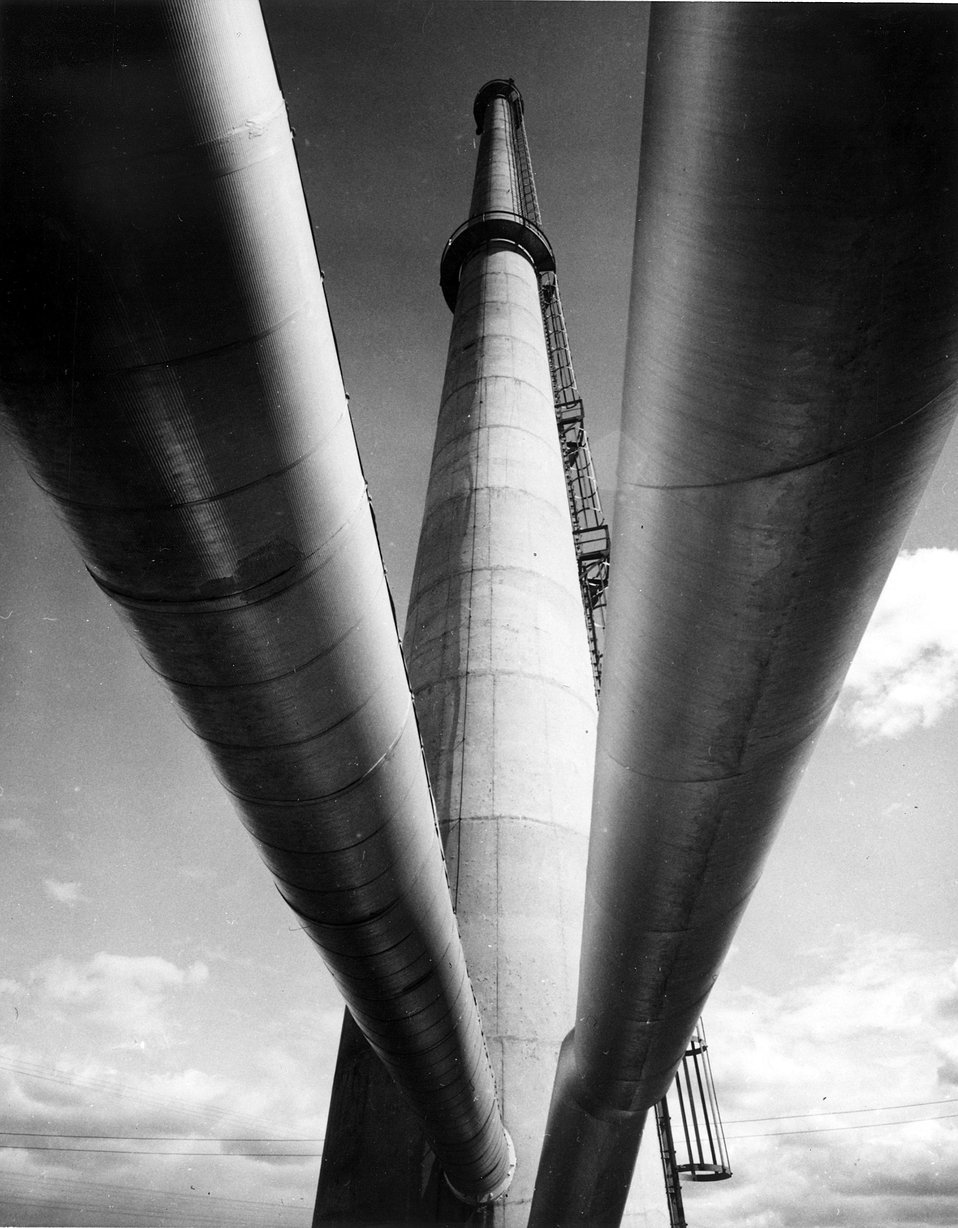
Shack at the Test Reactor Area at the U.S. Atomic Energy Commission's National Reactor Testing Station in Idaho. Circa 1974.